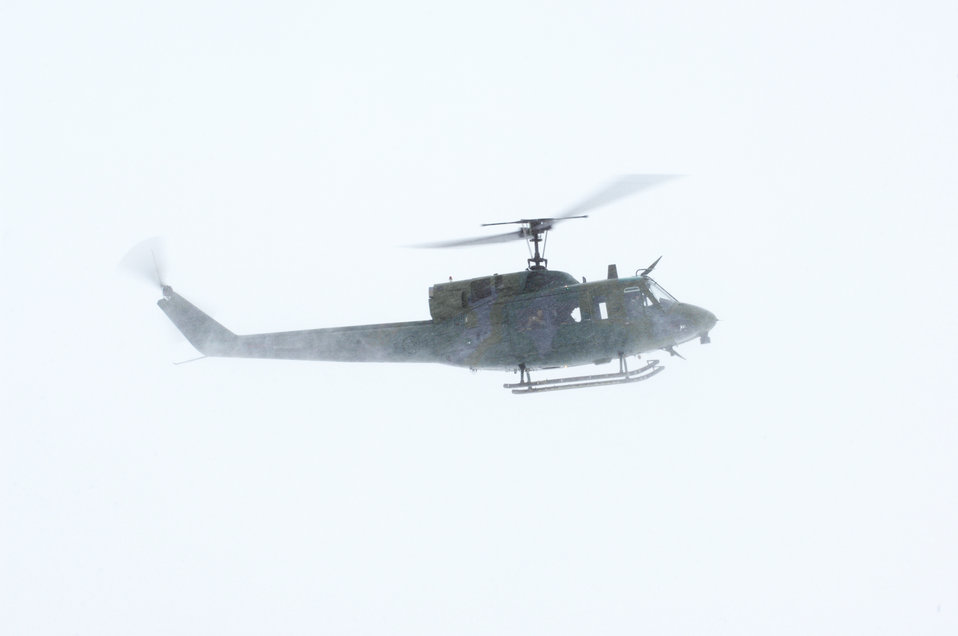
Minot Airmen render aid to flood efforts

A UH-1N Huey takes off to assist in disaster relief efforts from flooding in Bismarck, N.D., March 25 from Minot Air Force Base, N.D. Eight crewmembers and two helicopters from the 54th Helicopter Squadron are deploying to aid the recovery.